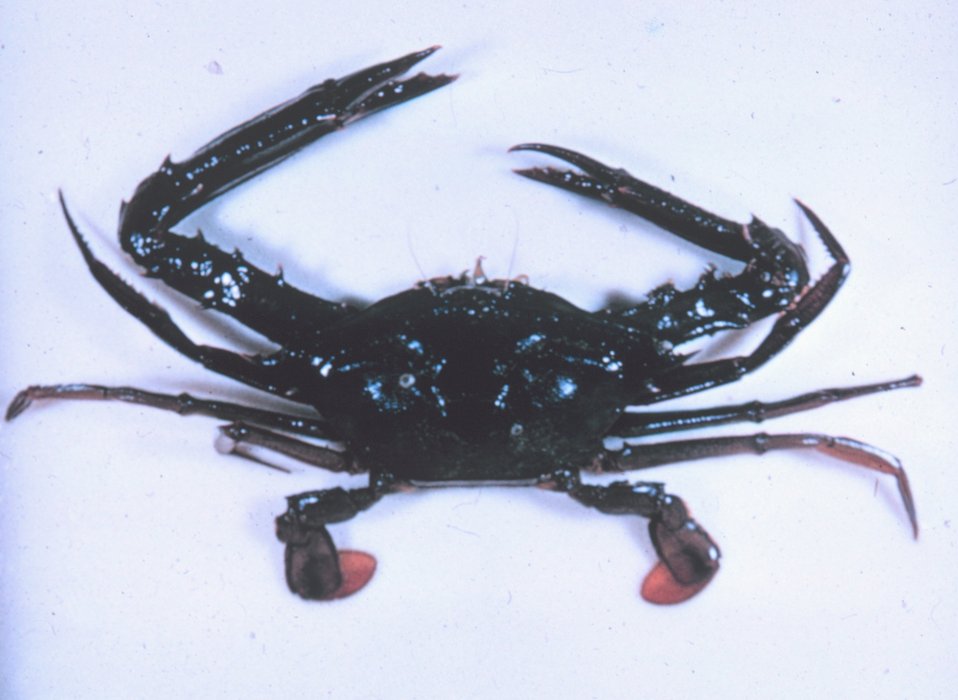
Crab